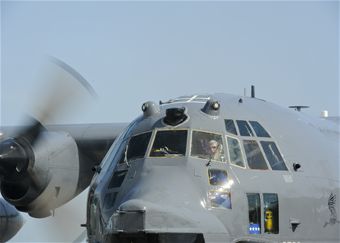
CSAF taxi's after his fini-flight

Air Force Chief of Staff Gen. Norton Schwartz taxis an MC-130E Combat Talon I after landing at Hurlburt Field, Fla., July 12, 2012. The mission was Schwartz’s last flight as an active duty officer and served as his “fini flight” in the Air Force.